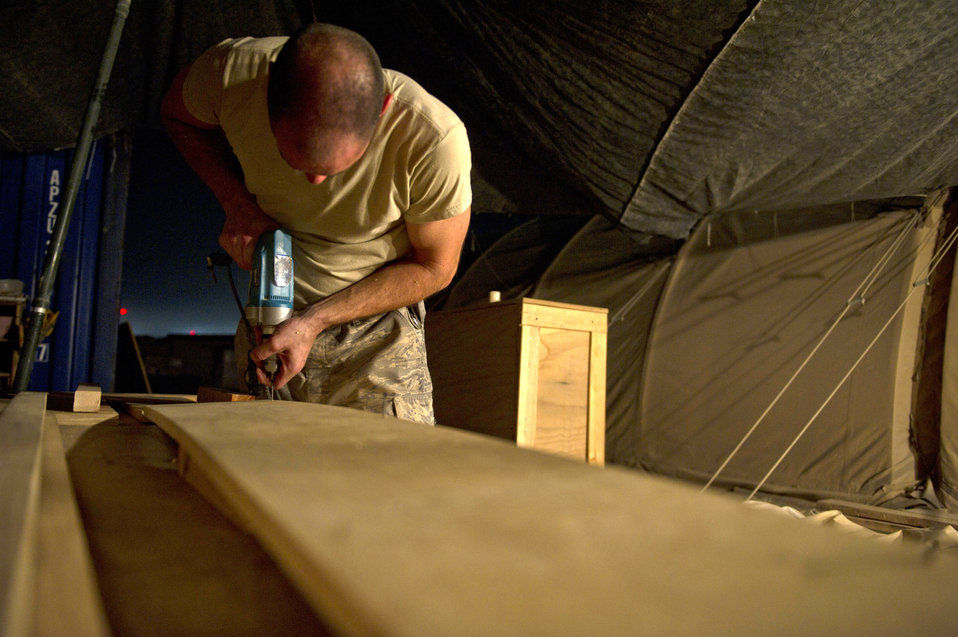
Sergeant Reininger

Master Sgt. Jason Reininger builds a child-size coffin to be turned over to the hospital at Camp Bastion, Afghanistan. Sergeant Reininger is an aerospace medical technician assigned to the 451st Expeditionary Aeromedical Evacuation Squadron.